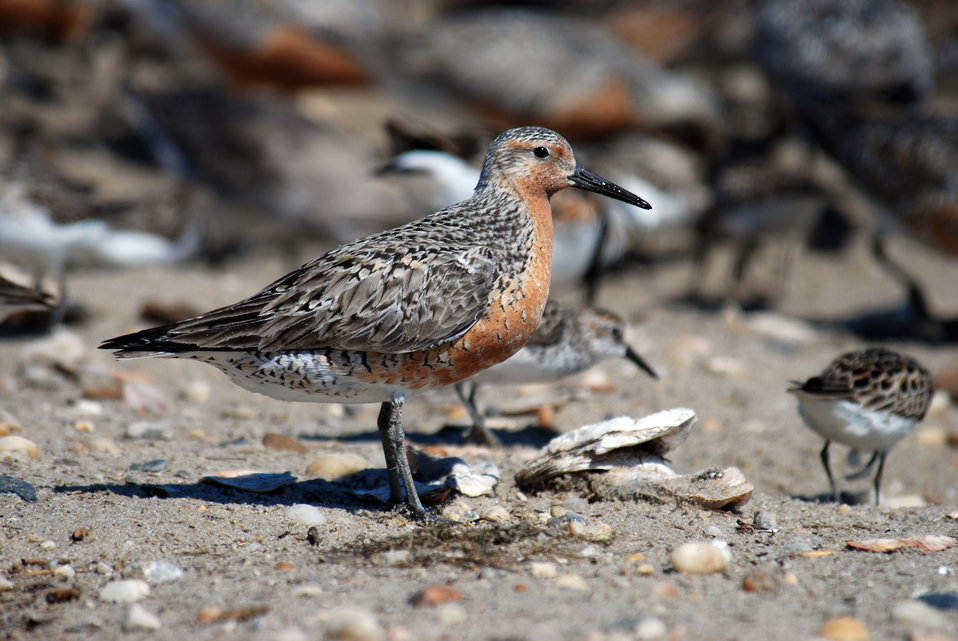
Red Knot

Mispillion Harbor, Delaware.